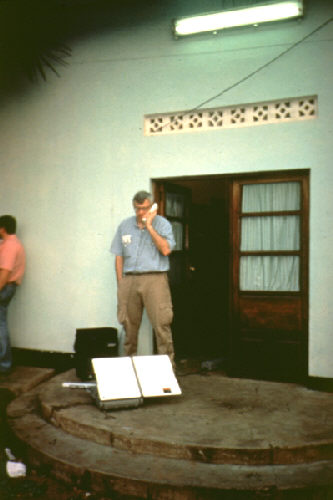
A CDC epidemiologist in Kikwit, Zaire, communicates with colleagues in Atlanta via satellite telephone.